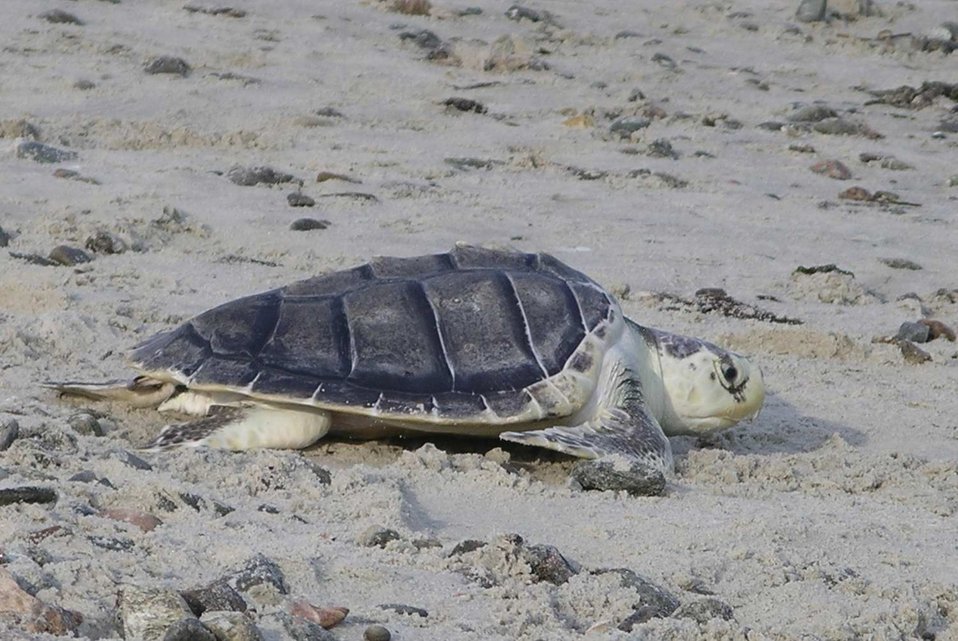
Kemp Ridley's sea turtle

This turtle is on his way home after being released from a cold-stun rehab center.